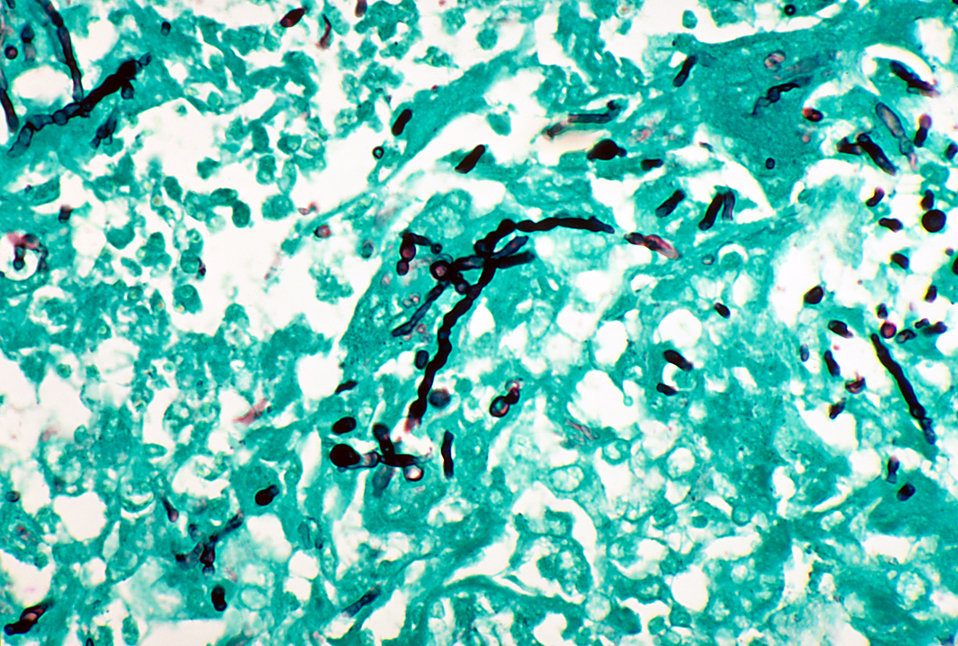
This micrograph reveals the histopathologic changes in phaeohyphomycosis due to Wangiella dermatitidis using PAS stain.